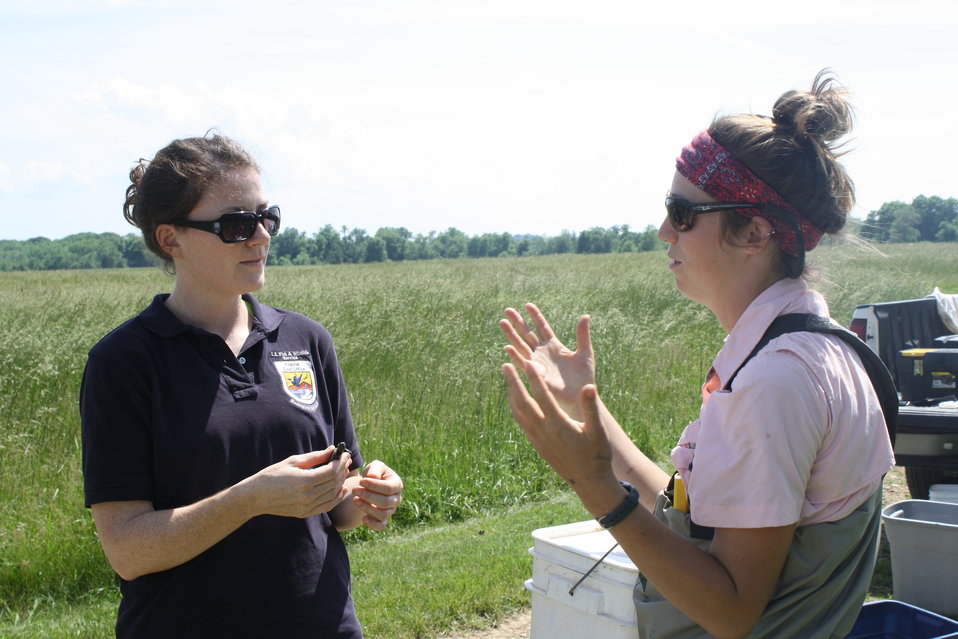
South River mercury study

Virginia Tech graduate student Brittney Hopkins talks with U.S. Fish and Wildlife Service biologist Anne Condon about her research on mercury levels in turtles living in the South River.